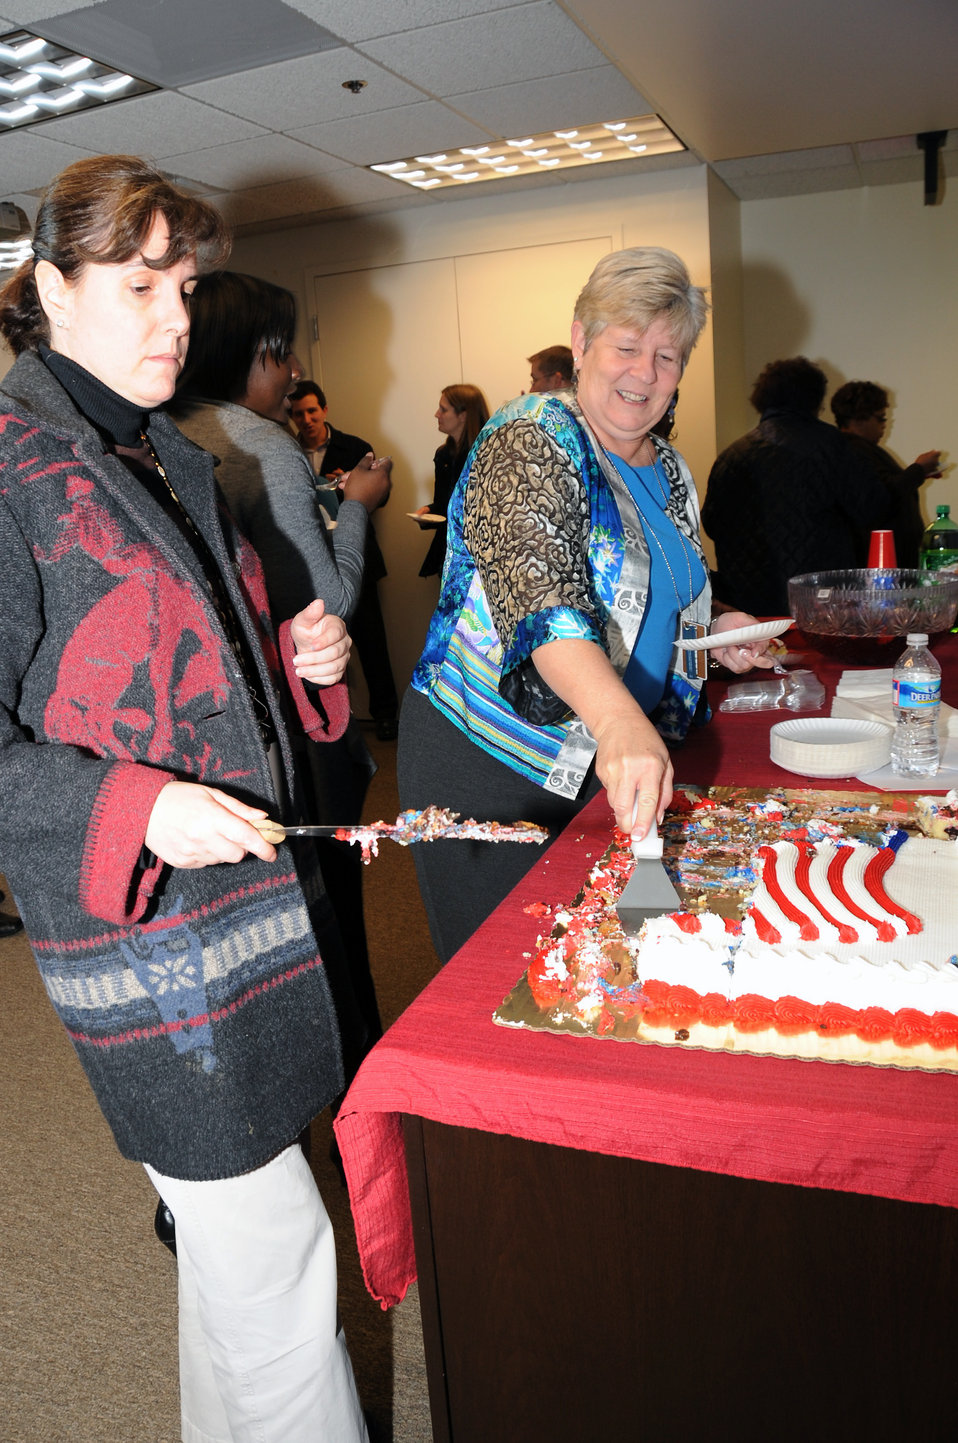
Honoring and Celebrating our Veterans

11.07.2012 Employees gathered in the Arlington Office to honor FWS Veterans